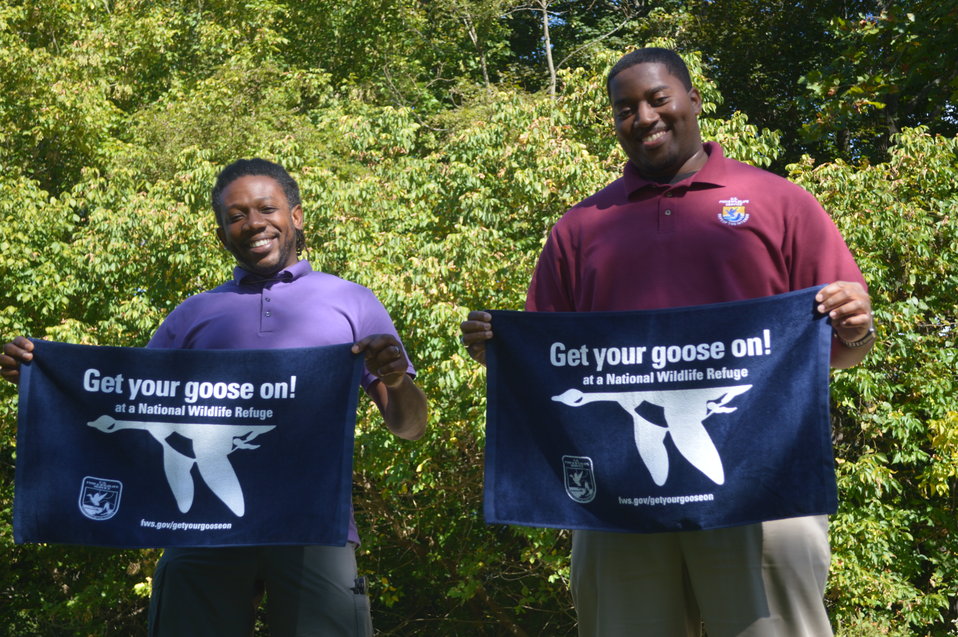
Get Your Goose On!

Photo taken at the National Conservation Training Center in Shepherdstown, WV.

Credit: Ryan Moehring / USFWS

#GetYourGooseOn